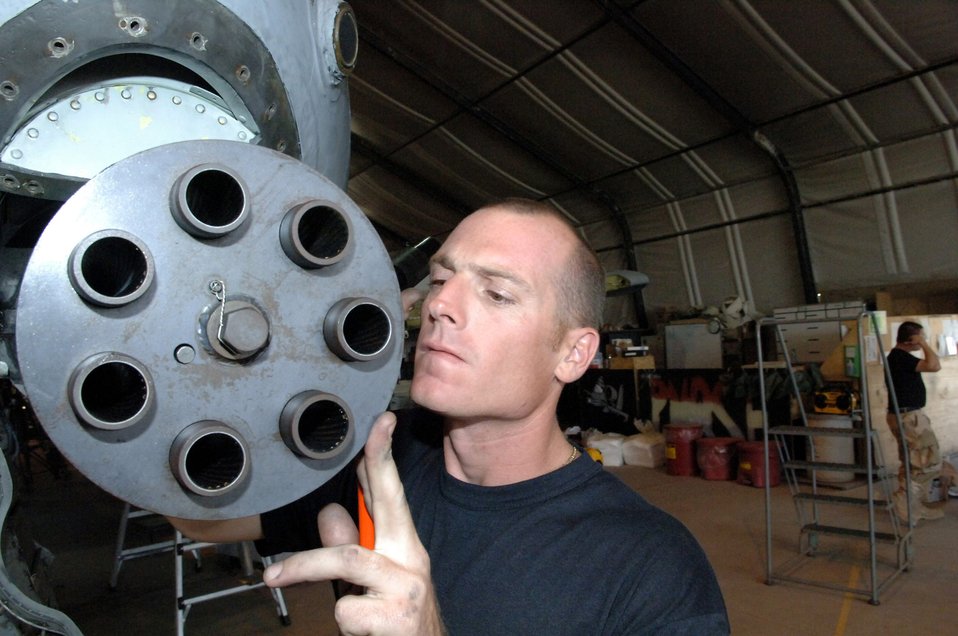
A-10 phase doc keeps OEF frequent flyers flying

BAGRAM AIR BASE, Afghanistan -- Tech. Sgt. Khristian Kirchhofer inspects a Gatlin gun during a recent phase inspection here. A-10 Thunderbolt IIs are inspected every 400 flying hours. Sergeant Kirchhofer is an armament specialist with the 455th Expeditionary Aircraft Maintenance Squadron.